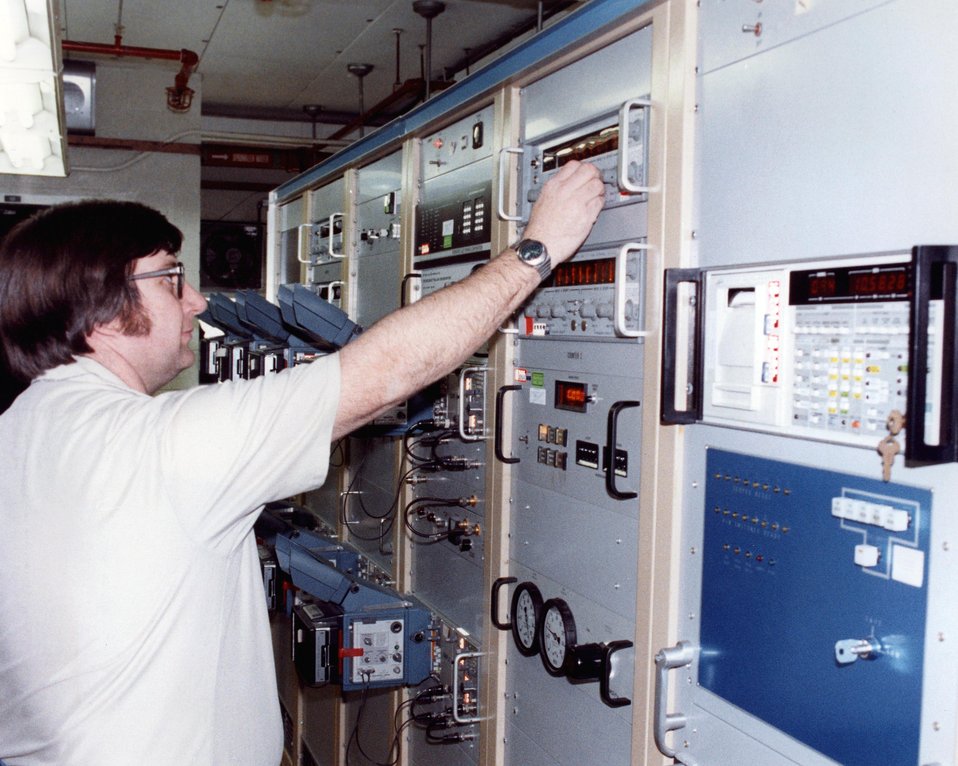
VIEW OF TEST FIRE CONSOLE.

AT THE MOUND FACILITY, RESEARCHERS WORK ON EXPLOSIVES TECHNOLOGY, TRITIUM TECHNOLOGY, PLUTONIUM-238 ISOTOPIC HEAT SOURCE DEVELOPMENT AND ASSEMBLY, AND ISOTOPIC SEPARATION. FABRICATING EXPLOSIVE COMPONENTS, SUCH AS DETONATORS,EXPLOSIVES TIMERS, AND EXPLOSIVES PELLETS, FOR NUCLEAR WEAPONS IS THE MAJOR PRODUCTION ACTIVITY. THE MOUND FACILITY STAFF IS DEVELOPING MATERIALS, PROCESSES, AND EQUIPMENT FOR POTENTIAL PRODUCTION APPLICATIONS TO SUPPORT PROGRAMS AT SEVERAL DOE LABORATORIES. THE MOUND FACILITY IS OPERATED FOR DOE BY MONSANTO RESEARCH CORPORATION. COMPONENTS ARE TESTED BOTH NON-DESTRUCTIVELY (USING SCANNING ELECTRON MICROSCOPY AND NEUTRON RADIOGRAPHY) AND DESTRUCTIVELY (LITERALLY EXPLODING THE COMPONENTS). THOSE COMPONENTS NOT SHIPPED TO BE USED IN WEAPONS ARE KEPT UNDER SURVEILLANCE AT MOUND AND TESTED UNDER ENVIRONMENTAL CONDITIONS FOR THE LIFETIME OF THE WEAPON SYSTEM.